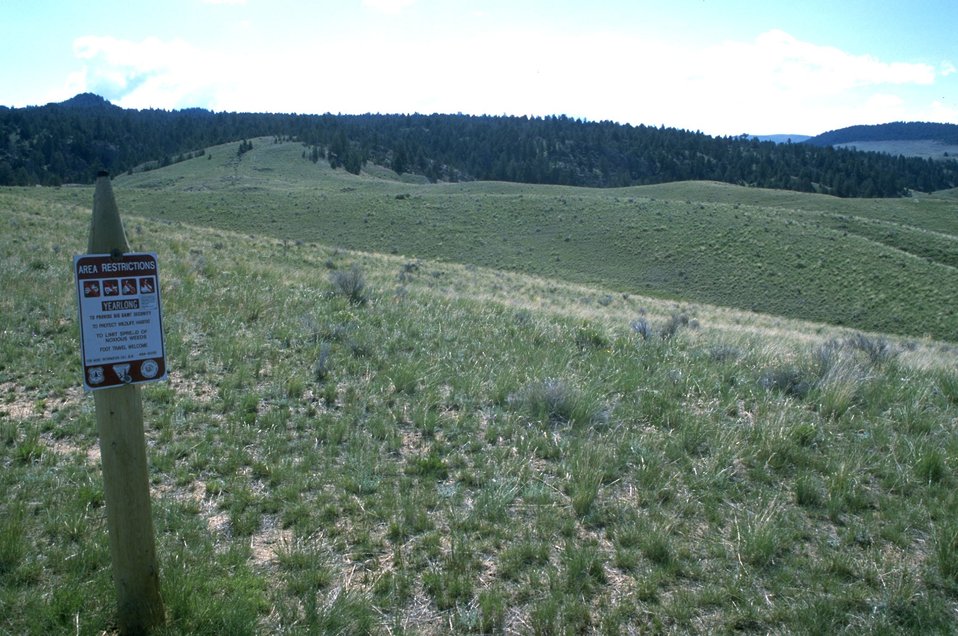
Area restriction sign in the Moose Creek area